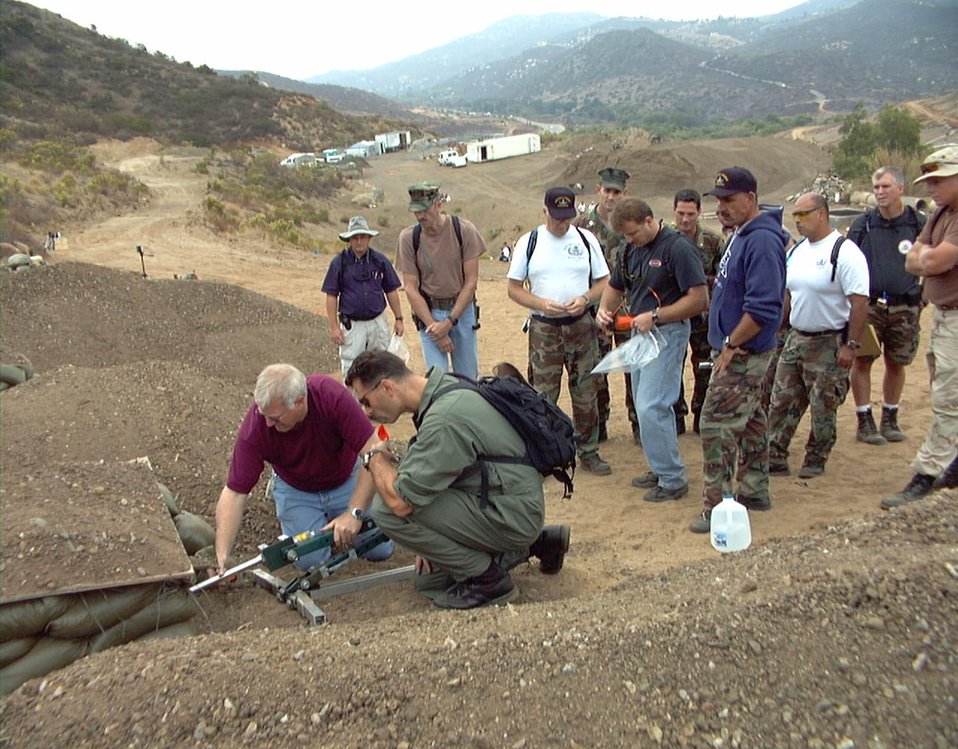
CHRIS CHERRY, SANDIA BOMB DISABLEMENT EXPERT DEMONSTRATES USE OF THE PERCUSSION-ACTUATED NON-ELECTRIC (PAN) DISRUPTER.

IN 1994 THE FIRST OPERATION AMERICA TRAINING PROGRAM WAS HOSTED BY SNL. SINCE THEN THERE HAVE BEEN REGIONAL WORKSHOPS THROUGHOUT THE NATION THAT INCLUDE CLASSROOM INSTRUCTION AND RANGE DEMONSTRATIONS OF BOMB DISABLEMENT TECHNIQUES. THE PAN DISRUPTER, DEVELOPED AT SANDIA HAS BECOME A PRIMARY TOOL USED BY BOMB SQUARDS TO DISABLE CONVENTIONAL HANDMADE-TYPE BOMBS REMOTELY.